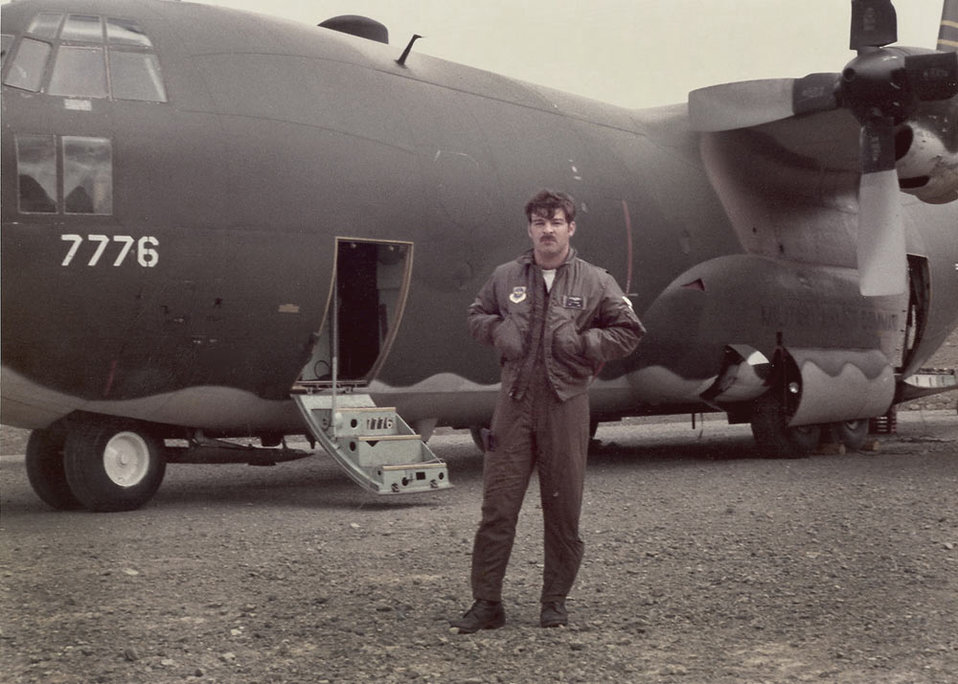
Tom Alvarez Pacific Region

Tom Alvarez, a Public Affairs Specialist with the Idaho Fish and Wildlife State Office, was on active duty with the Air Force, 1970-1978, serving as an aircraft loadmaster, which is aircrew duty, first on C-5A's flying out of Dover AFB in Delaware to the Pacific, Europe and the Middle East, most notably several trips to Tehran, Iran. He later was assigned to a C-130E Hercules unit, 'Herky Birds,' flying with the 17th Tactical Airlift Squadron (TAS), 'The Firebirds,' out of Elmendorf AFB in Alaska.